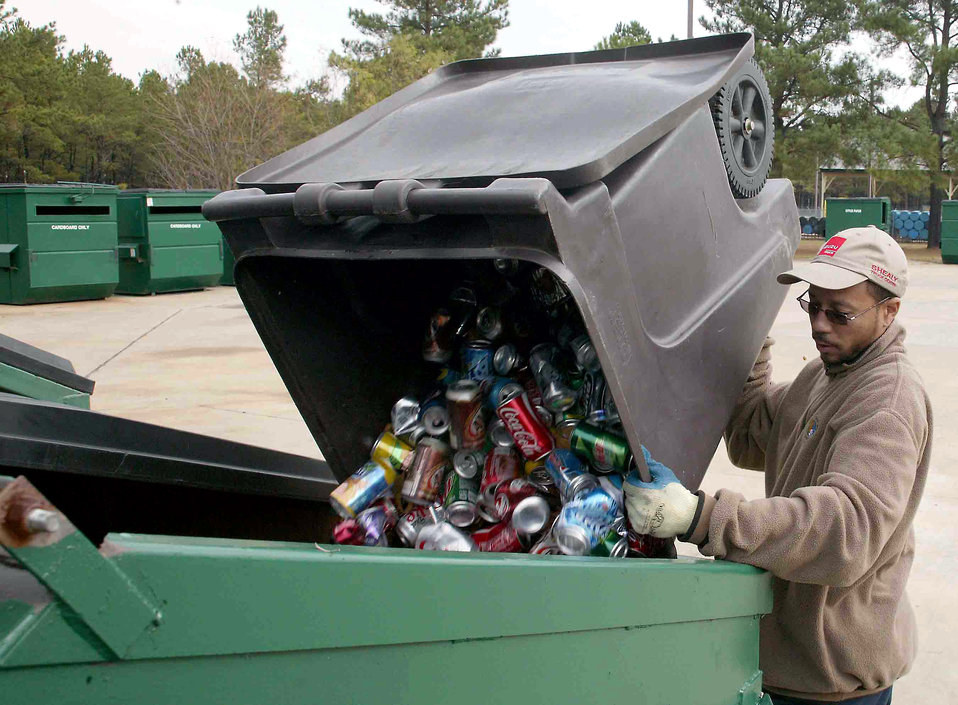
One man's trash is another man's treasure

Dana Green sorts and cleans the many bins Nov. 27 at the recycling center on Shaw Air Force Base, S.C. Base officials recycle aluminum cans, plastic and glass bottles, office paper, newspaper, magazines, cardboard, printer cartridges, shoes and metals. Mr. Green is a Shaw AFB recycle center attendant.